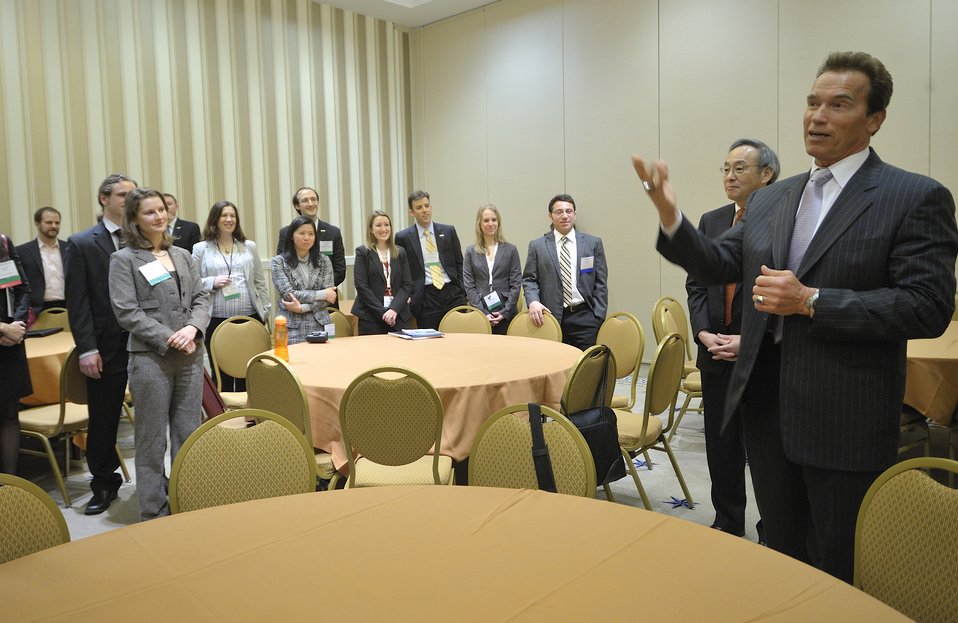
ARPA-E Energy Innovation Summit 2011, 11 of 83

Steven Chu, Secretary, United States Department of Energy and Arnold Schwarzenegger, Former Governor of California surprise graduate students who traveled to the summit.